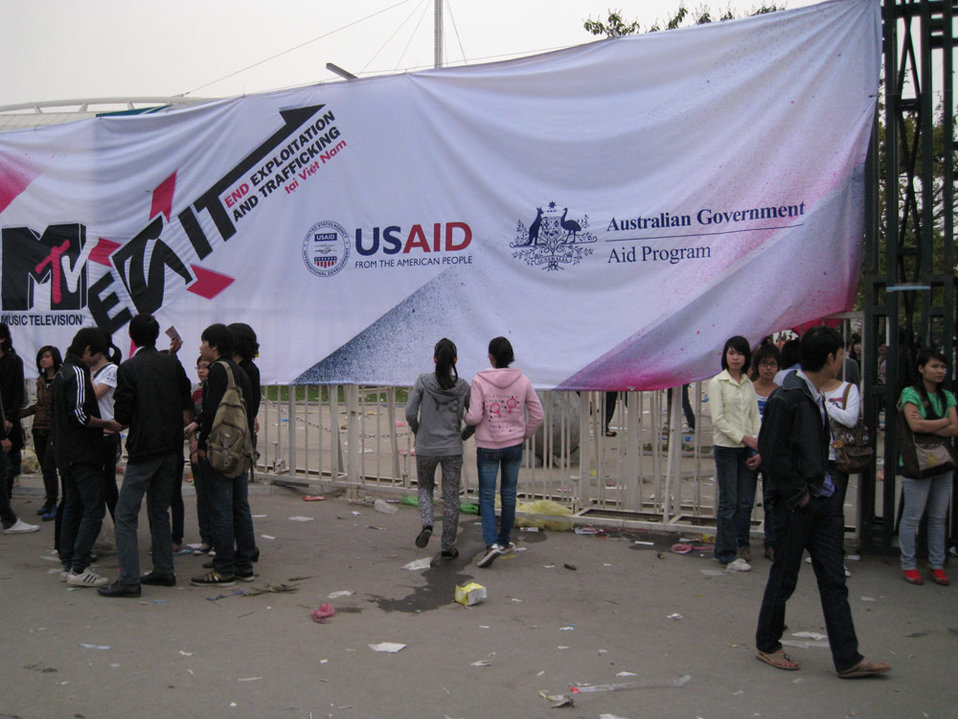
USAID Vietnam and MTVEXIT against Human Trafficking

Hanoi concert, March 27, 2010